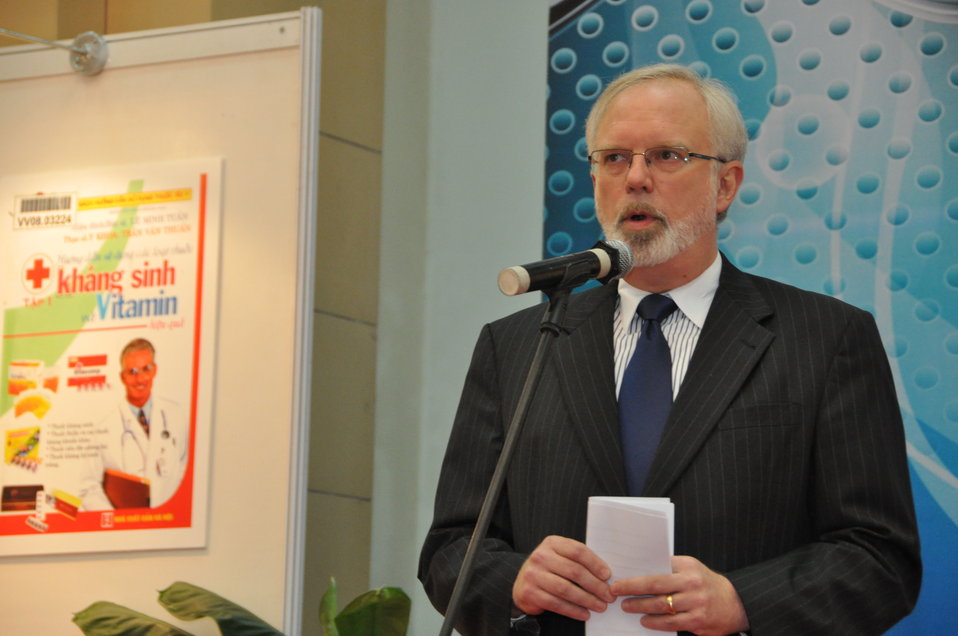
U.S. Ambassador David Shear opens safe medicine exhibition in Hanoi

Safe Medicine Exhibition